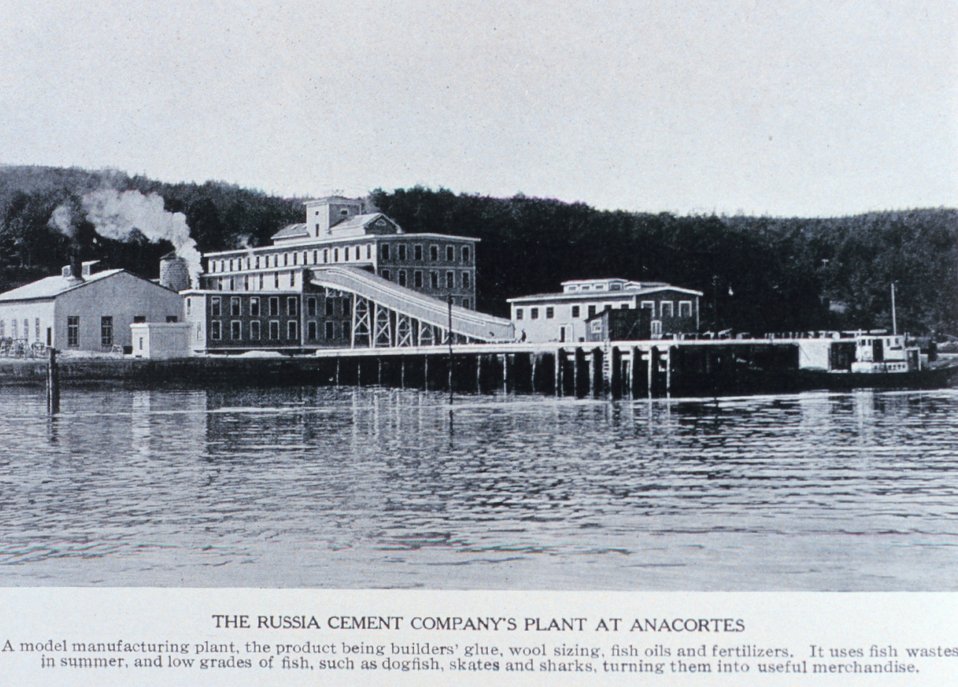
'The Russia Cement Company's Plant at Anacortes'. This plant made glue and other products from fish processing waste, not cement. In: 'Puget Sound and Western Washington Cities-Towns Scenery', by Robert A. Reid, Robert A. Reid Publisher, Seattle, 1912. P. 108.